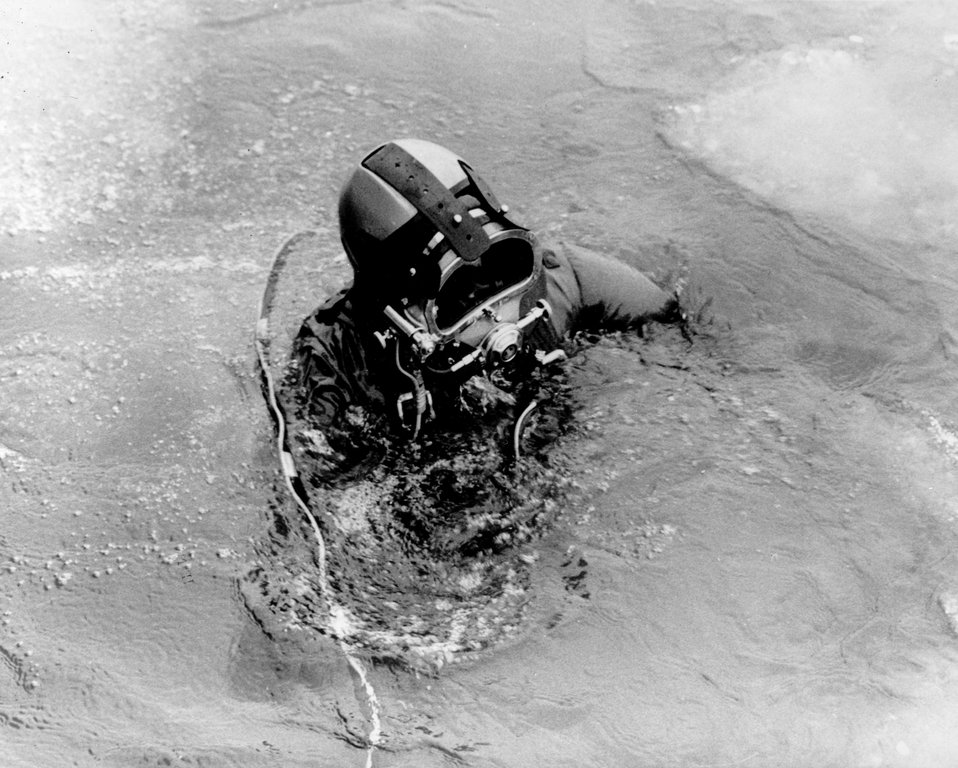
Bob Anderson, a U of Michigan diver, prepares to submerge through 'slush ice' in the frigid waters of Lake Michigan, to direct the placement of temperature recording instruments on the boulder strewn bottom.
c.1972